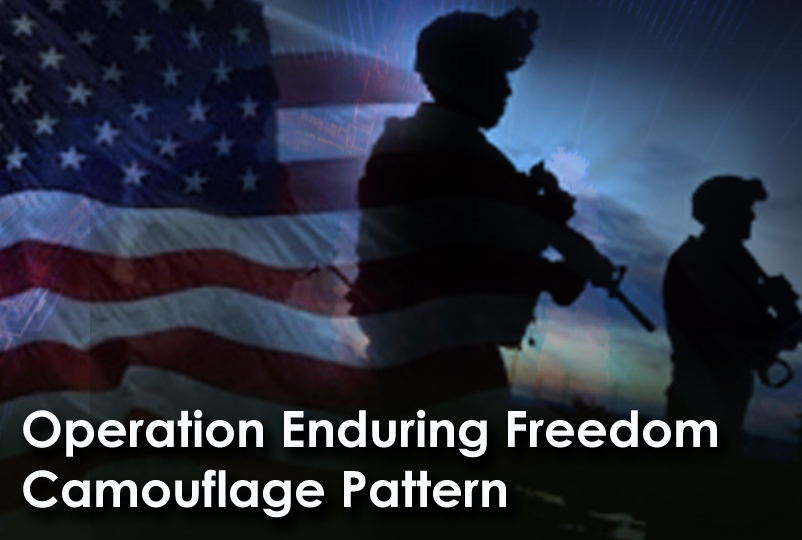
Operation Enduring Freedom